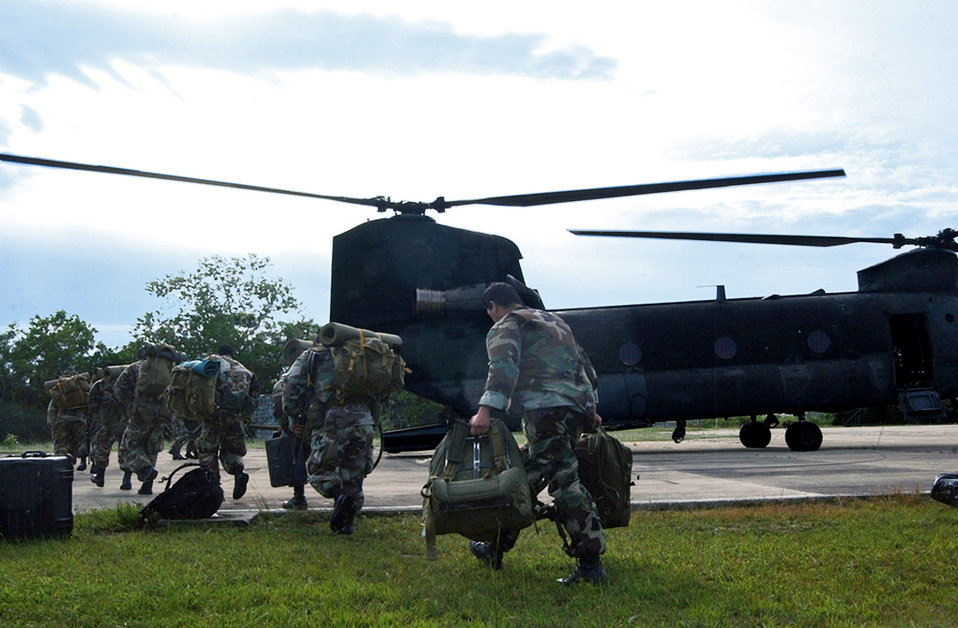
Assessment team arrives in Belize

Members of the Belizean Defense Force board a U.S. Army CH-47 Chinook helicopter in Belize City, Belize, to be transported to other areas within the country following the landfall of Hurricane Dean here Aug. 21. The Chinook, assigned to the 1st Battalion, 228th Aviation Regiment at Soto Cano Air Base, Honduras, transported approximately 20 U.S. Soldiers and Airmen here as part of an initial assessment team following the hurricane.